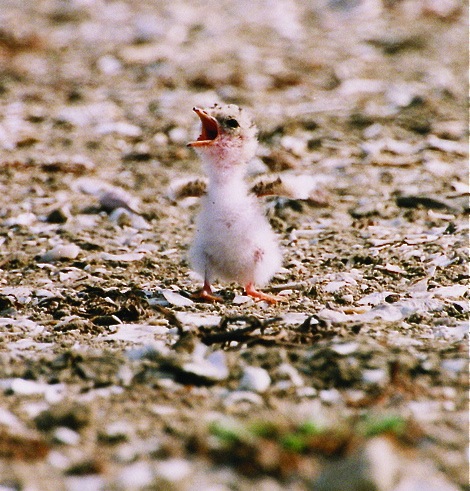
a chick calls for its parent

California least tern chick
Tijuana Slough National Wildlife Refuge, CA